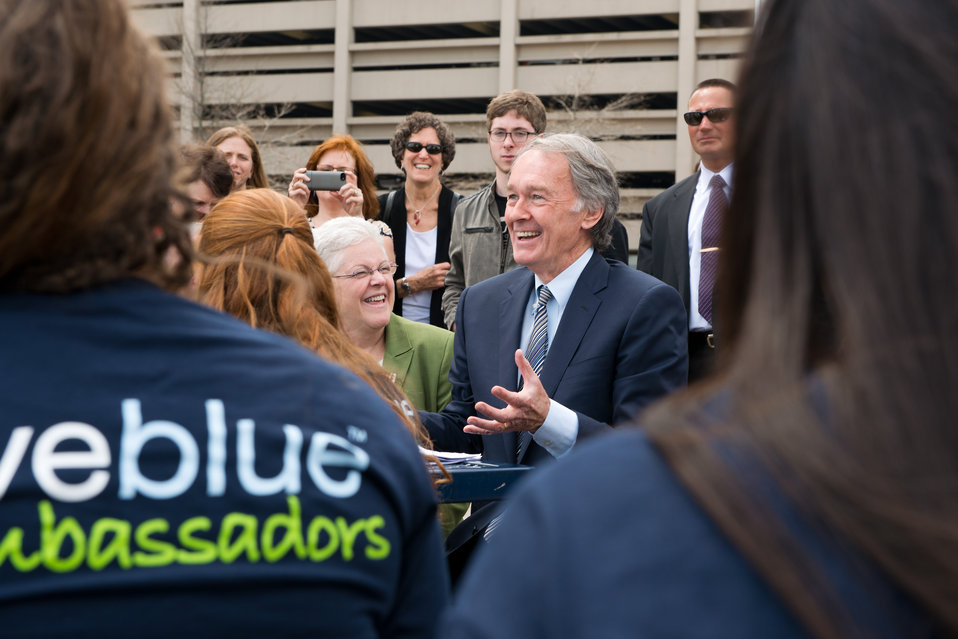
A Day In The Life of the EPA Administrator - April 22, 2014 12:48 pm

McCarthy and Markey share a laugh when talking about their long careers in protecting the environment and the importance of Earth Day.